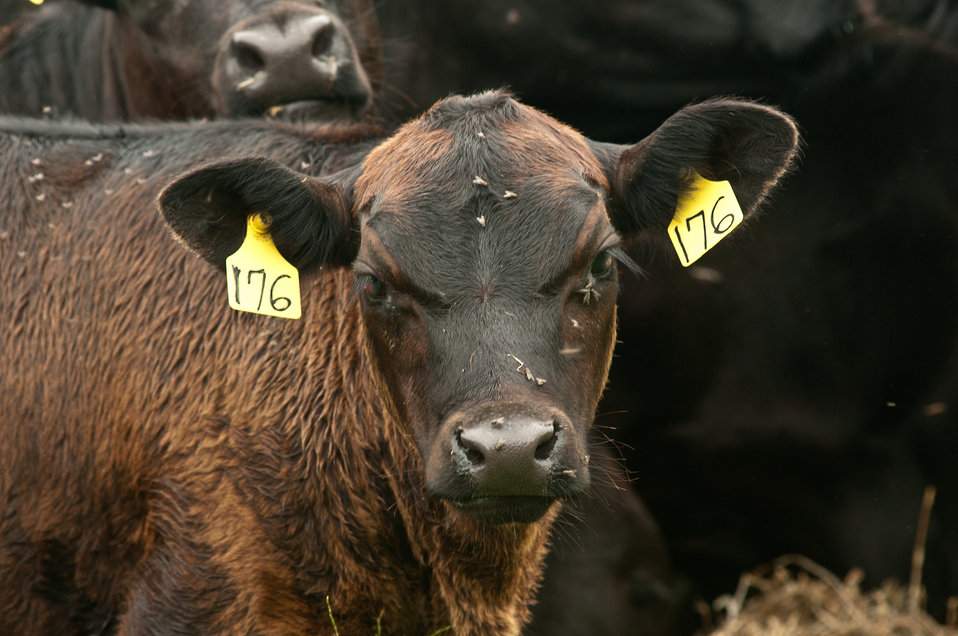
Black Angus cows and calves graze organic pastures, and for added nutrition and variety, they enjoy a daily feeding of sweet silage at Nick’s Organic Farm, owned by Nick Maravell, in Adamstown, MD on Friday, July 12, 2013. The white plastic wrapped bales of pasture grass and alfalfa have been fermenting for months to create sweet silage that stores well and can be used to feed cattle at varying amount all year long. The fermentation process sweetens the taste and increases the vitamin levels. The farm produces Black Angus beef, chicken, turkey, eggs, hay, soybeans, corn, alfalfa, orchard grass, rye; and other crops. The cattle are 100% grass-fed receiving certified organic pasture, certified organic hay (in winter), water and mineral salts mixed with sea kelp. The cattle are not fed hormones, antibiotics or animal products. Poultry feed from grain is ground from organic grain. The poultry also graze on organic pastures. The farm has conducted on-farm research with federal, state and non-profit agencies to refine organic practices. An organization such as the U.S. Department of Agriculture (USDA) Agricultural Research Service (ARS) center in Beltsville has been able to conduct research to improve organic crops and to breed and manage the cattle so that they have.